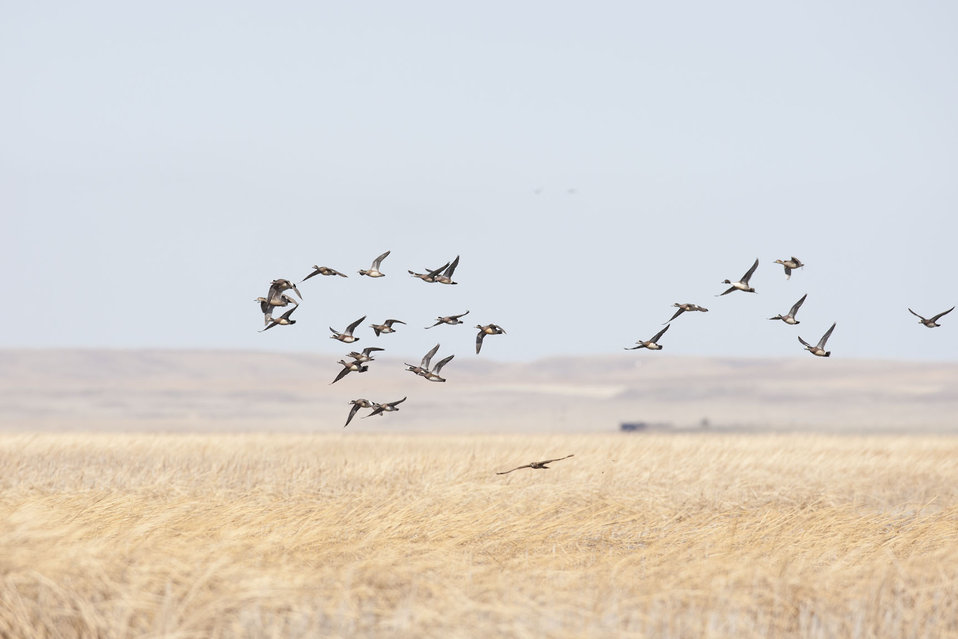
Waterfowl in Flight

The lands of the refuge were established to protect and provide habitat for migratory birds that cross State lines and international borders and are by law a Federal trust responsibility.

The refuge is of great value to waterfowl and shorebirds, as well as other migrating water-dependent bird species, because of the diversity of wetland and upland habitats that provide for the diverse life cycle needs of these species.